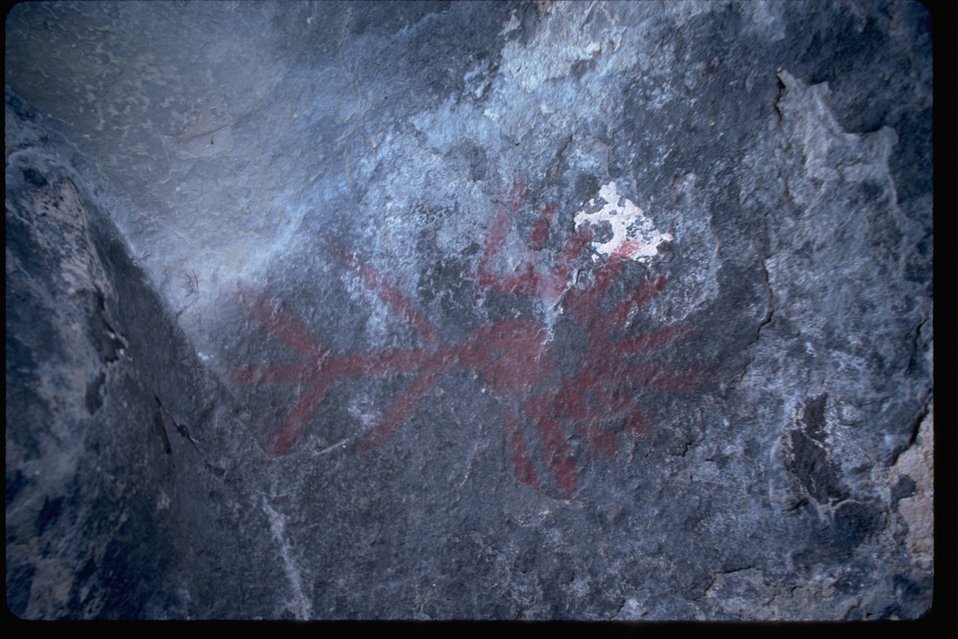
Rock art located in Jackknife Canyon.